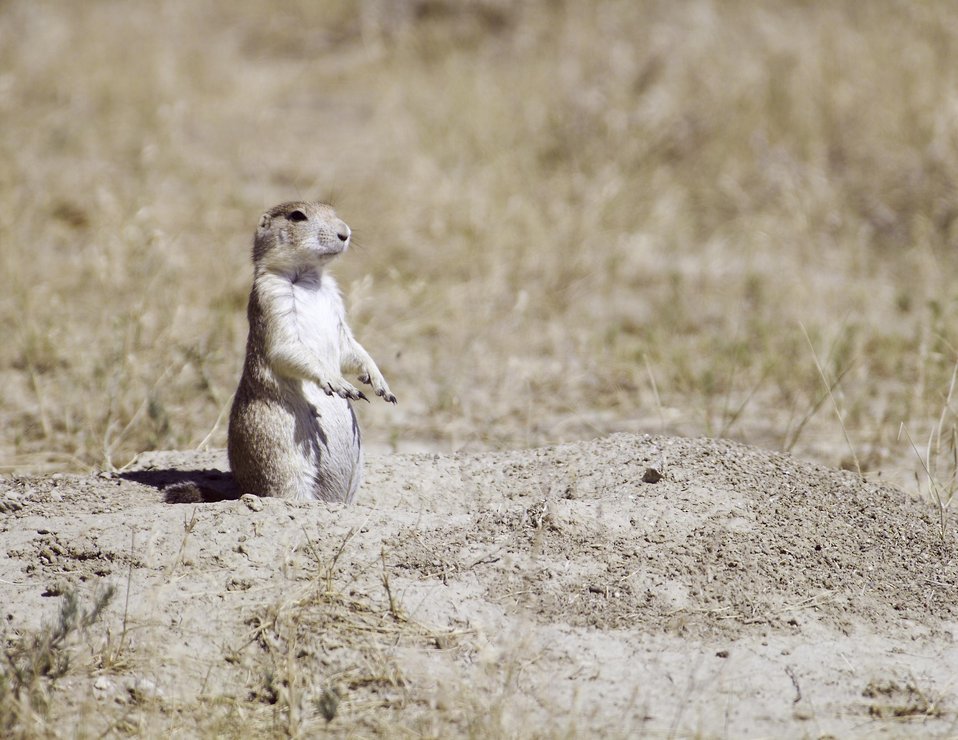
Many prairie dogs as well as other wildlife are at home at hills surround Naval Petroleum Reserve No.3(NPR) near Casper, Wyoming.

The Rocky Mountain Oilfield Testing Center (RMOTC) is a Department of Energy field test site for emerging and developing technologies to address critical energy issues. The field test site, located on Naval Petroleum Reserve No.3 (NPR-3), is a 10,000-acre site. There are approximately 700 well bores with 600 producing wells ranging in depth from 500 to 5,000 feet.